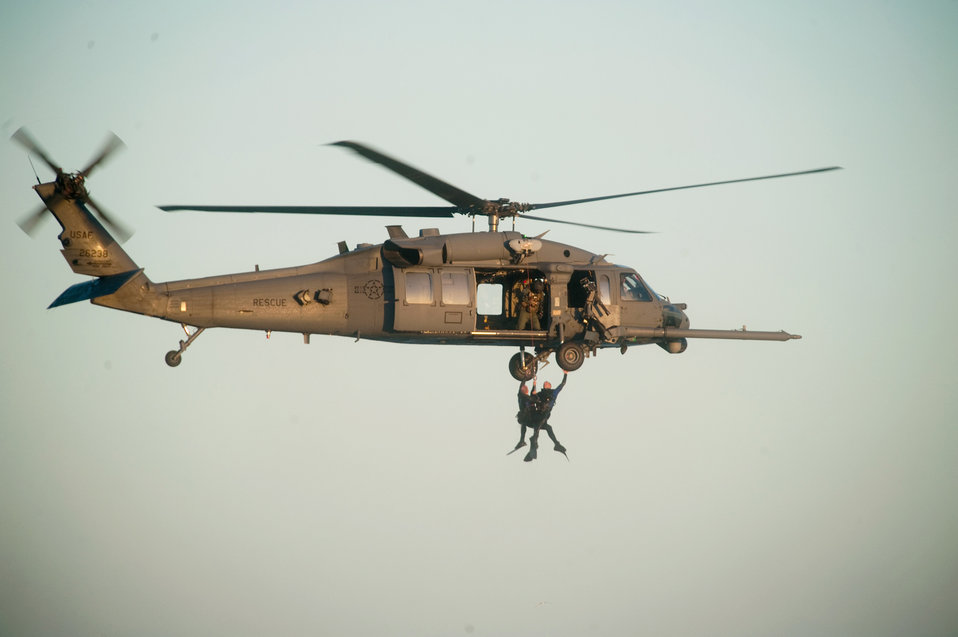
Pararescuemen participate in Air Force Week

Pararescuemen grab a tire before the final lift into HH-60 Pave Hawk during an Air Force Week rescue demonstration Oct. 27, 2010, at Cocoa Beach, Fla. The pararescuemen are from the 920th Rescue Wing at Patrick Air Force Base, Fla.